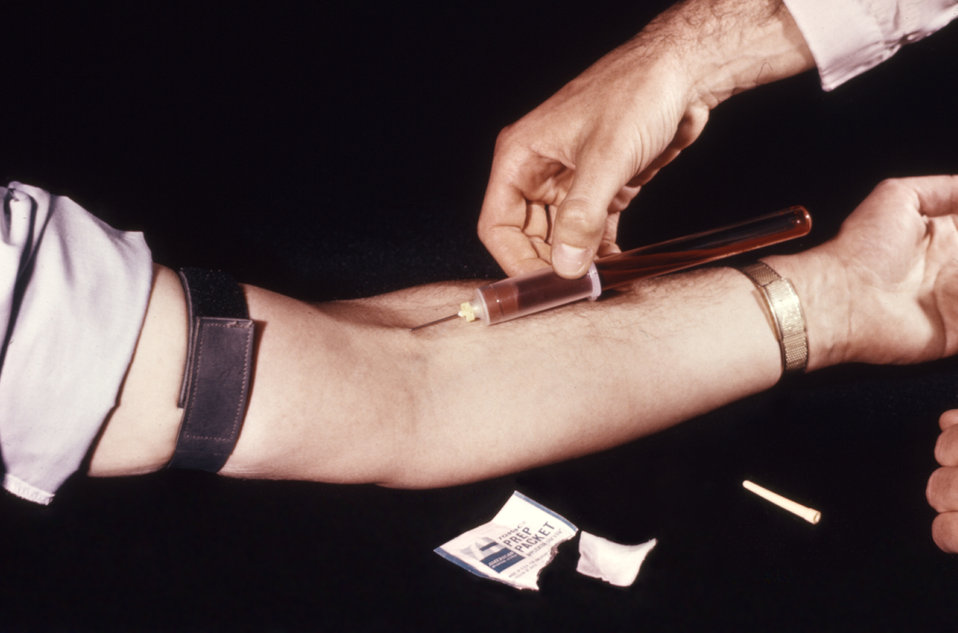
The CDC clinician shown here is using a 'Vacutainer �' to obtain a blood sample during an arbovirus study.